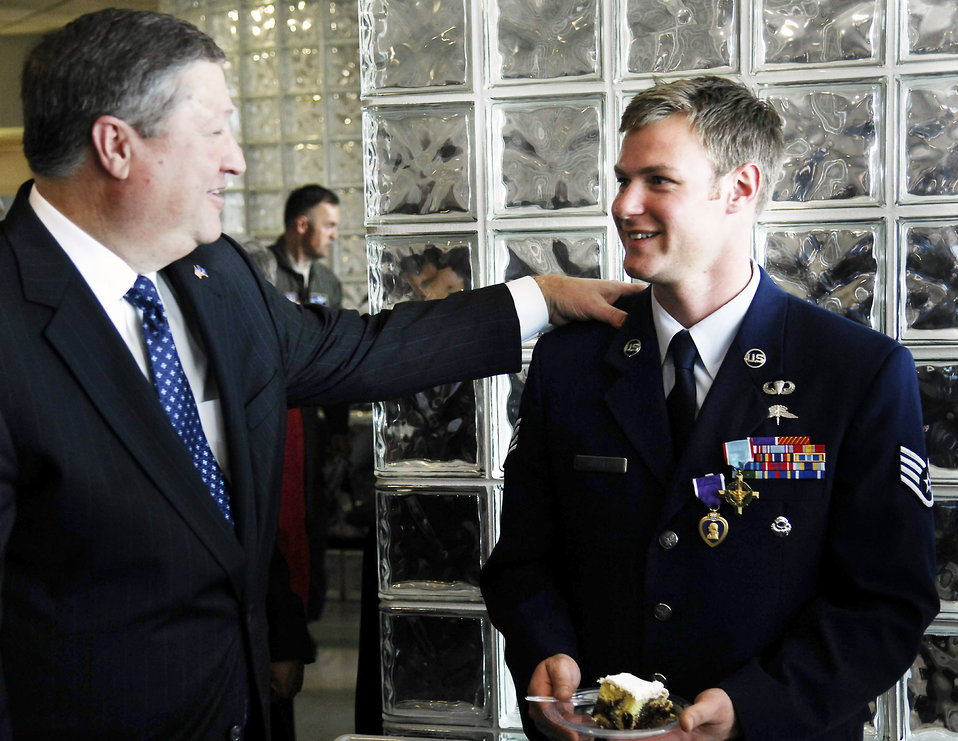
Combat controller receives Air Force Cross, Purple Heart

Secretary of the Air Force Michael B. Donley talks to Staff Sgt. Zachary Rhyner after a ceremony to present the NCO the Air Force Cross March 10 at Pope Air Force Base, N.C. Sergeant Rhyner of the 21st Special Tactics Squadron received the medal and a Purple Heart for uncommon valor during Operation Enduring Freedom for his actions during an intense 6.5-hour battle in Shok Valley, Afghanistan, April 6, 2008.